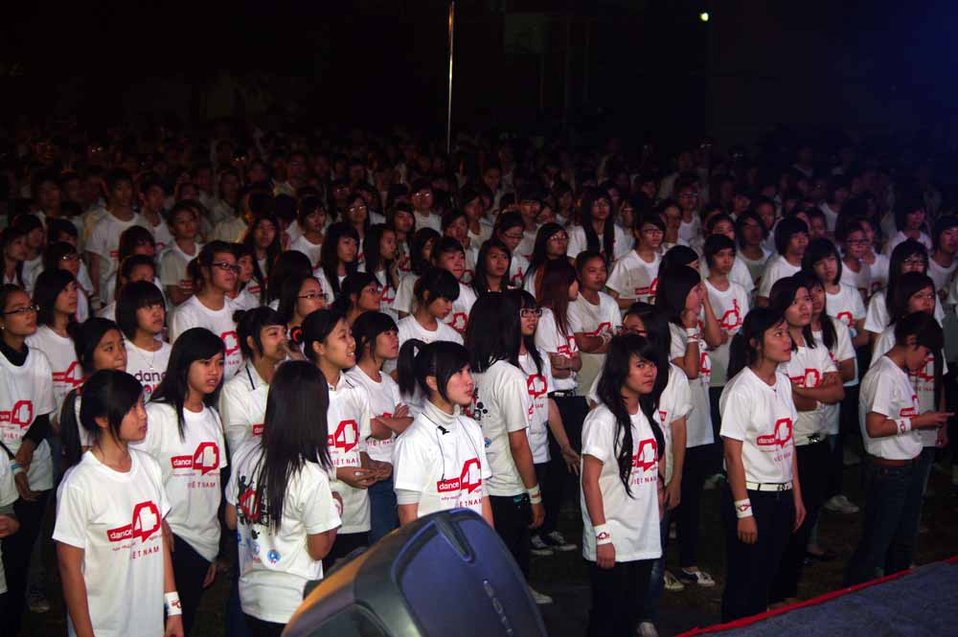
dance4life, Hanoi